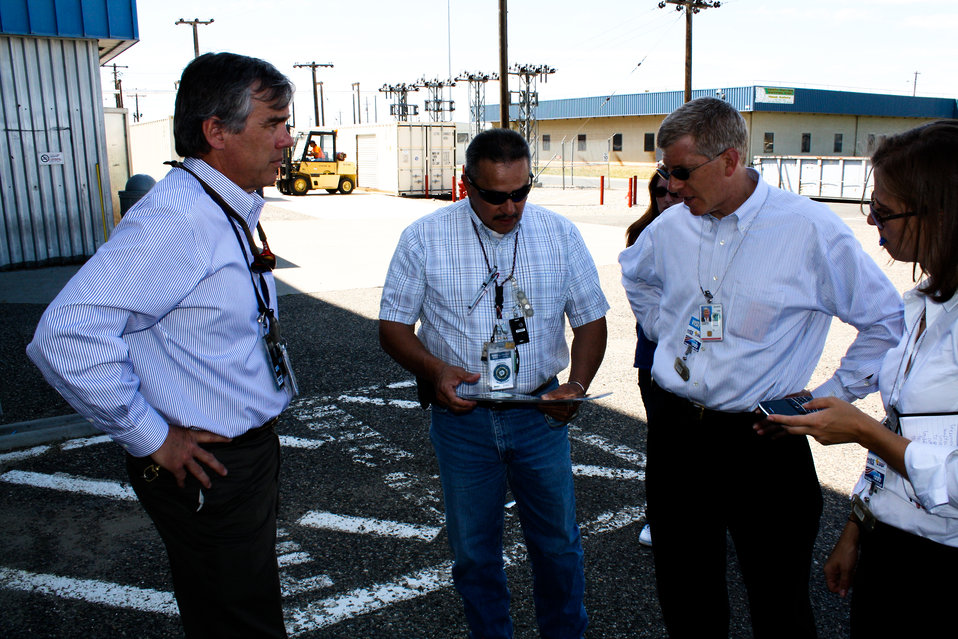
Poneman Vit Plant Visit 06-14-10-162